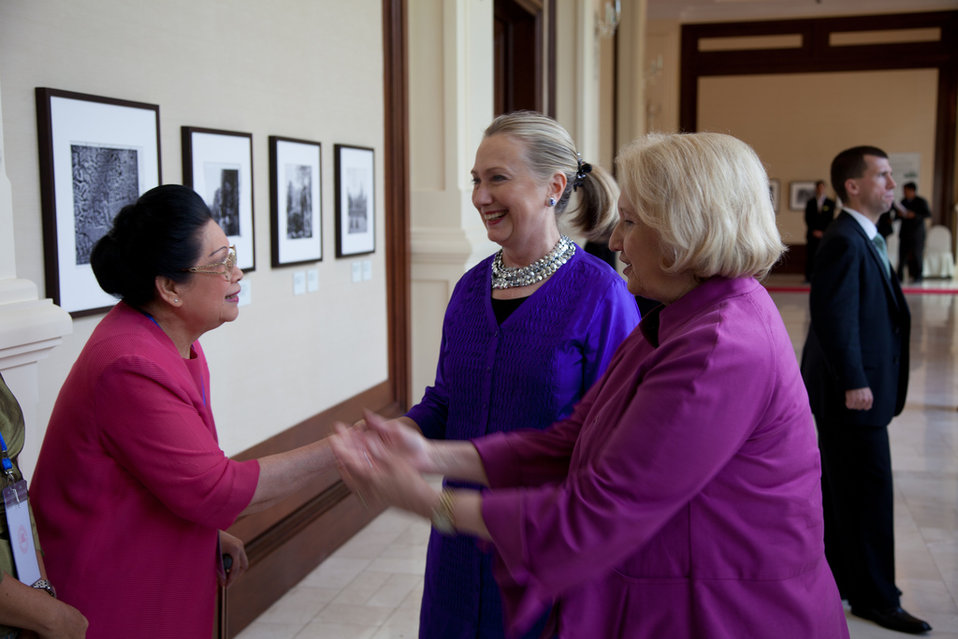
Secretary Clinton Speaks With Representatives at the LMI Women's Event

U.S. Secretary of State Hillary Rodham Clinton and Ambassador-at-Large for Global Women's Issus Melanne Verveer speak with a participant of the Lower Mekong Initiative Gender Equality and Women's Empowerment event in Siem Reap, Cambodia, on July 13, 2012.